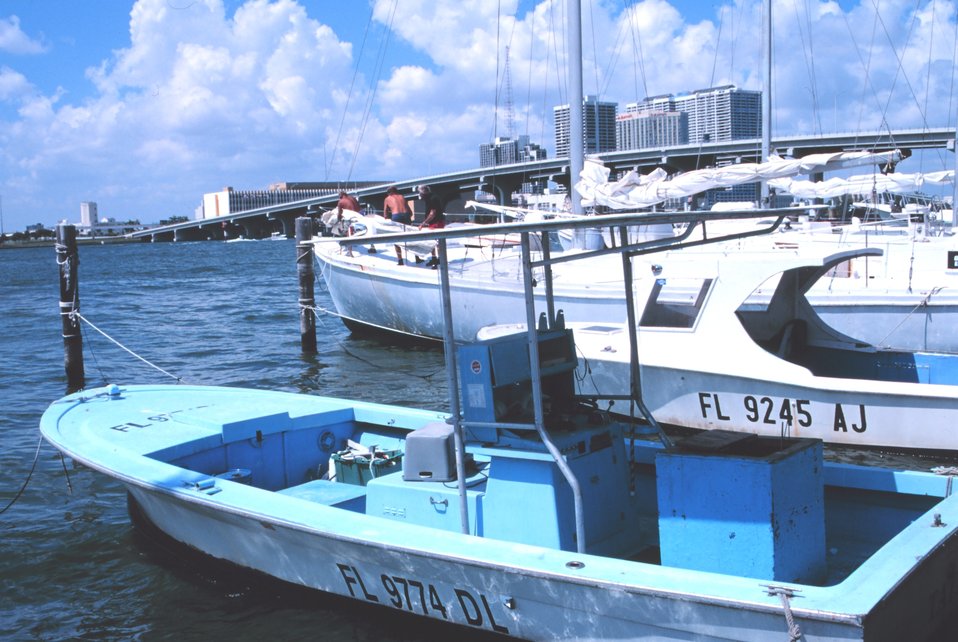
Small commercial fishing craft tie up next to pleasure craft at Watson Island